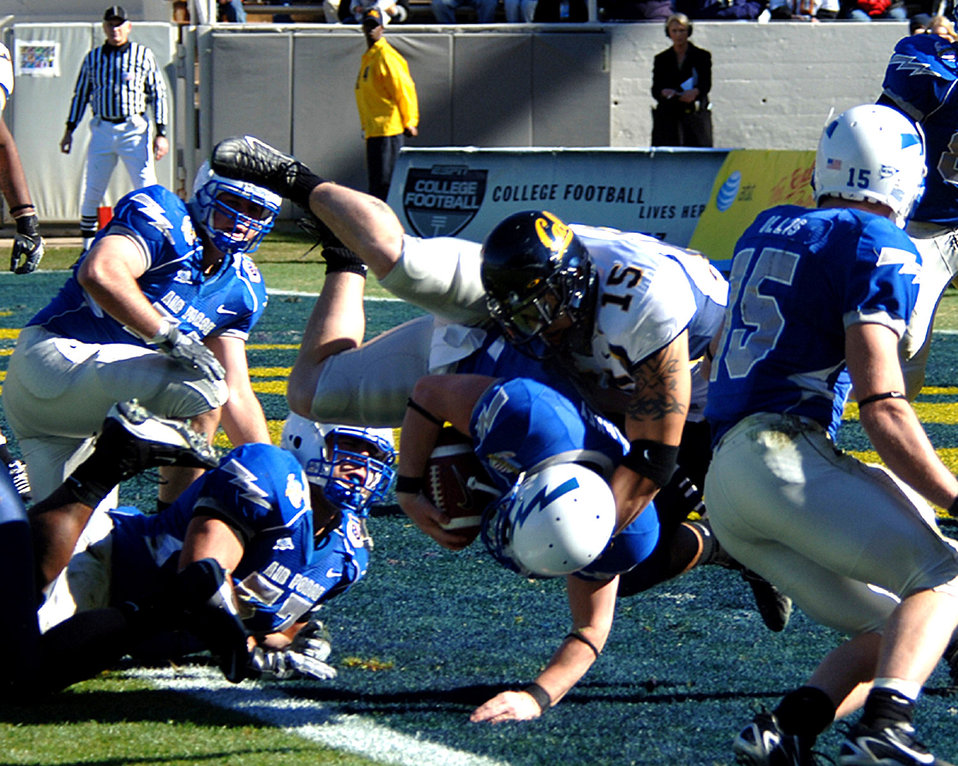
Late rally grounds Falcons

Air Force Academy quarterback Shaun Carney tumbles into the end zone for a touchdown in the first quarter of the Bell Helicopter Armed Forces Bowl Dec 31 in Fort Worth, Texas. The University of California Golden Bears rallied late to beat the Falcons 42-36.